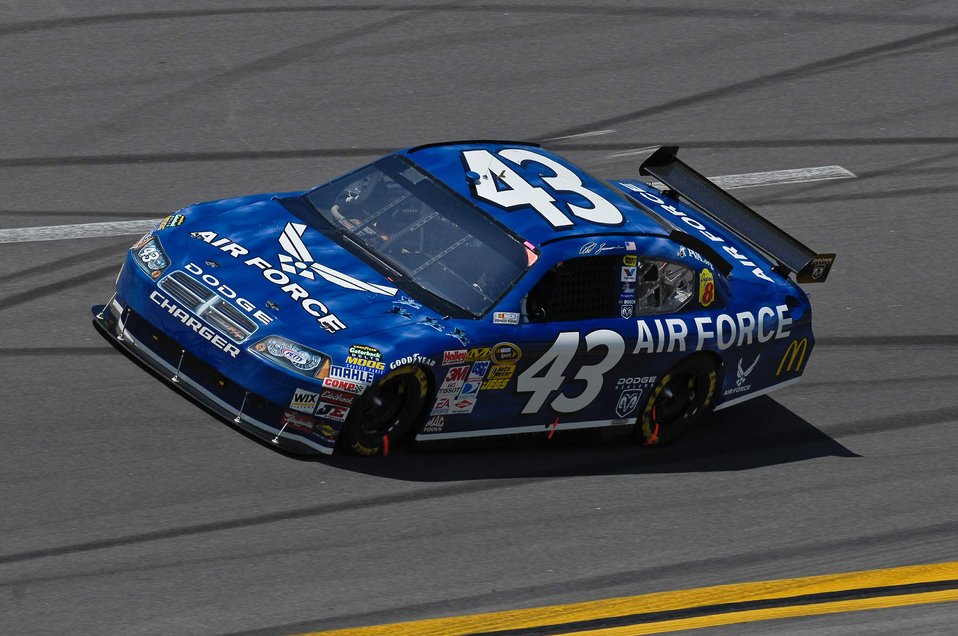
Air Force at Talladega

The #43 Air Force-sponsored NASCAR driven by Reed Sorenson makes its way around the track during the Aaron's 499 race April 26 at Talladega Superspeedway in Talladega, Ala. This was the first race for the #43 Richard Petty Motor Sports car featuring the Air Force primary paint scheme. The car started 41st but finished 11th in the race.